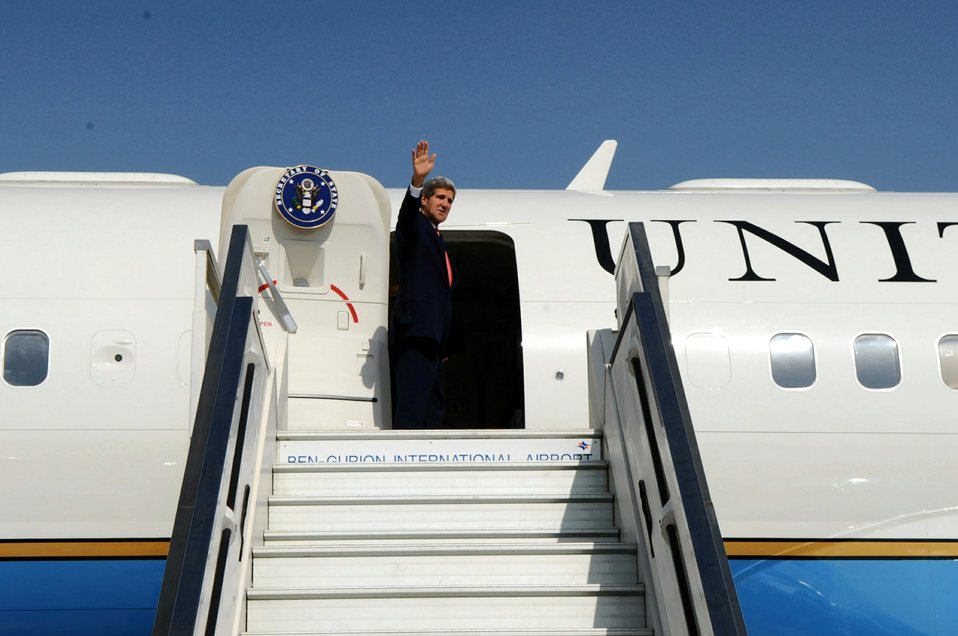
Secretary Kerry Departs Tel Aviv En Route to Geneva

U.S. Secretary of State John Kerry waves goodbye before departing Ben Gurion International Airport in Tel Aviv, Israel, en route to Geneva, Switzerland, on November 8, 2013.